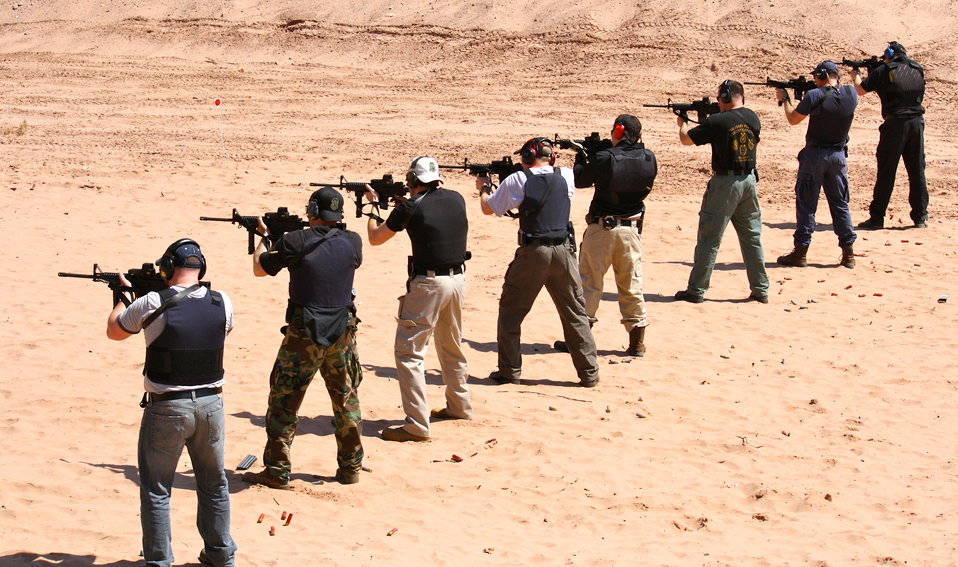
Agents with AR-15s

Law Enforcement target practice at outdoor shooting range in Glastonbury, CT.